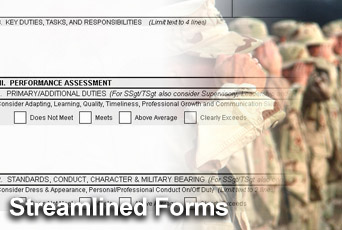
Air Force streamlines, modifies officer, enlisted evaluation forms

The Air Force is introducing new officer and enlisted evaluation forms as it transforms its personnel processes.